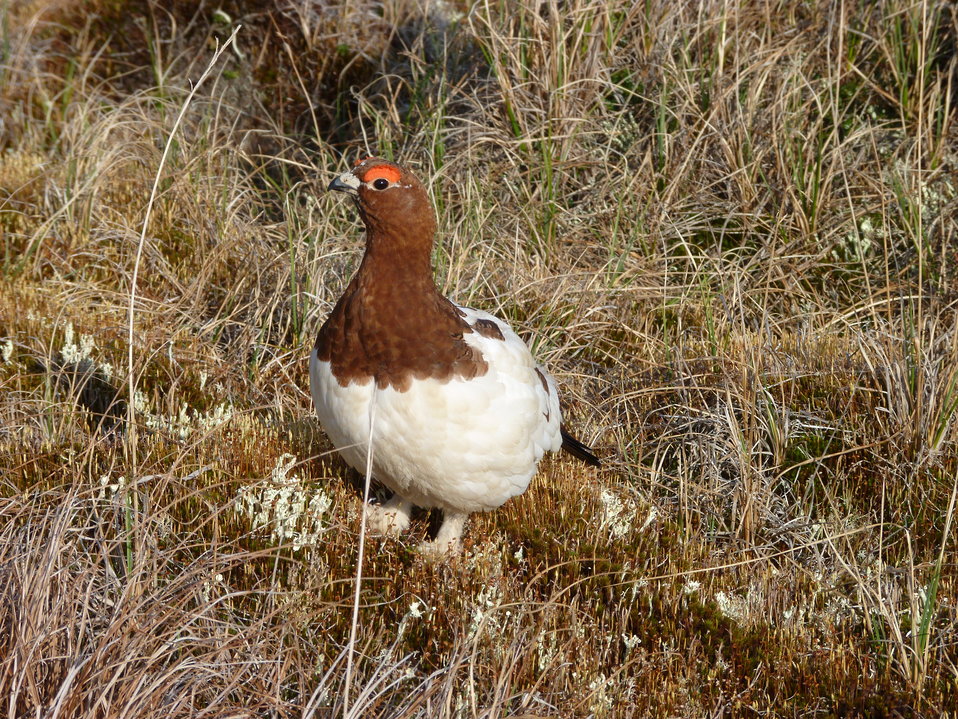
Willow Ptarmigan male

Andreafsky wilderness, Yukon Delta National Wildlife Refuge